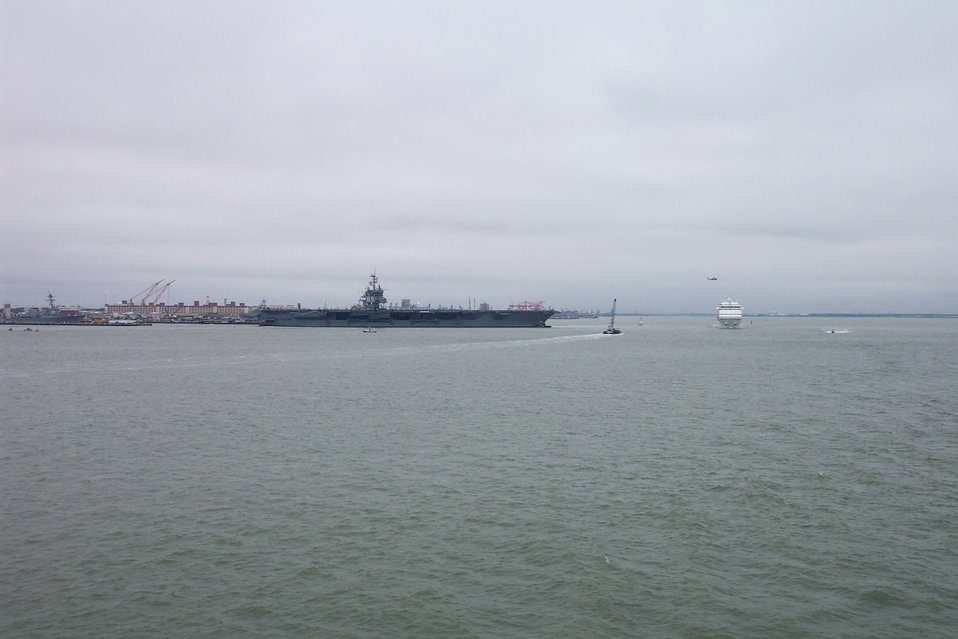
USS ENTERPRISE maneuvering for docking.